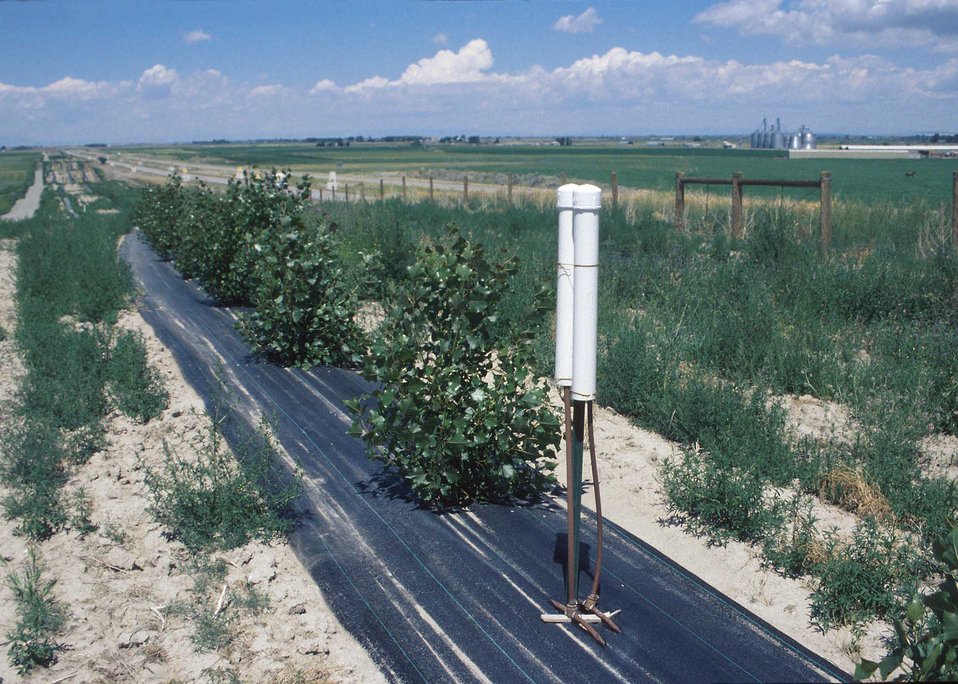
Windbreak established in Bonneville County to control blowing dust along a major interstate highway.